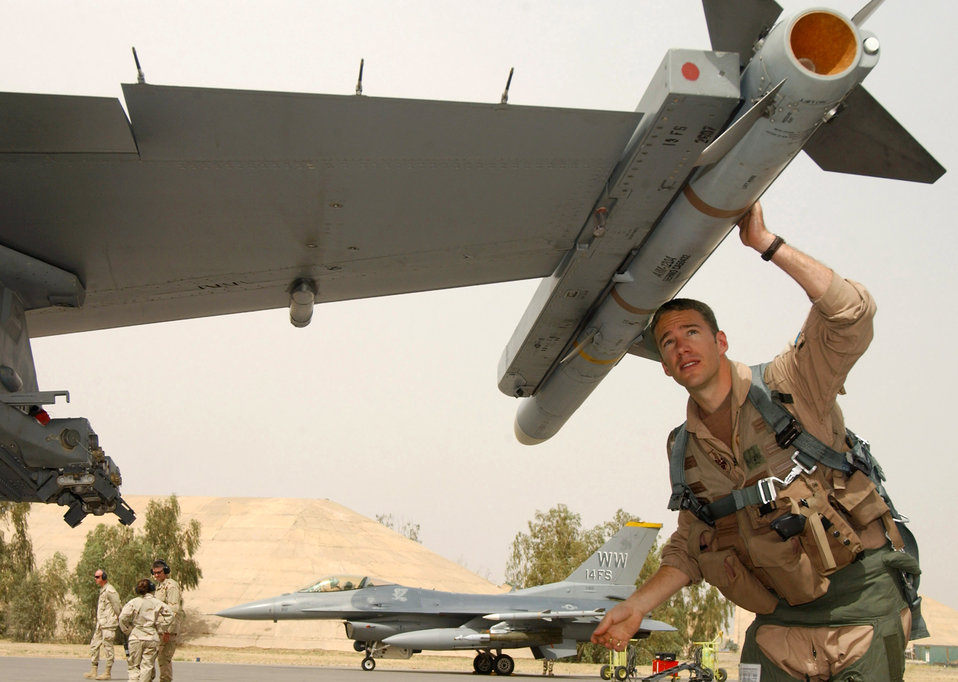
Checking it out

Capt. Bryan Spence pre-flights his F-16 Fighting Falcon May 30 at Balad Air Base, Iraq, before a combat mission. Assigned to the 14th Expeditionary Fighter Squadron, he is deployed from the 14th Fighter Squadron at Misawa Air Base, Japan.